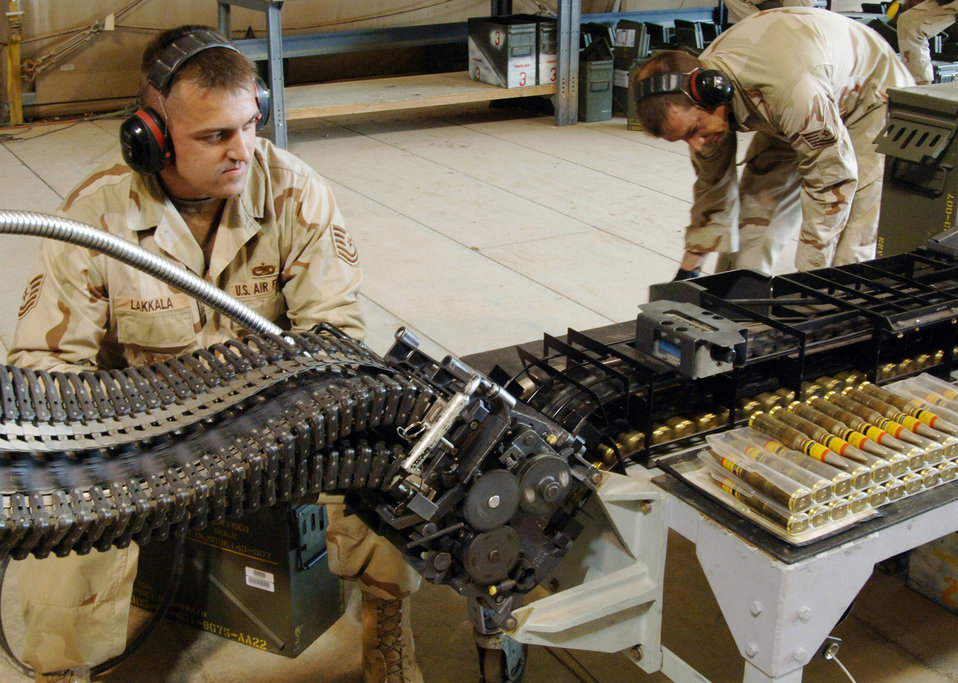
New ammo improves pilot safety, reduces collateral damage

Tech. Sgt. Chris Lakkala (left) regulates the rate of operation for the replenisher tray as it feeds PGU-28A/B 20mm cannon rounds into the universal ammunition loading system while Tech. Sgt. J.C. Whitney prepares more rounds to load through the replenisher Feb. 25 at Balad Air Base, Iraq. The new ammo allows for higher velocity, a greater standoff distance and increased safety for pilots, all contributing to greater effectiveness while providing close-air support. Its use Feb. 26 against insurgents east of Baghdad, Iraq, marked the first in battle for Air Force F-16 Fighting Falcon pilots. Both Airmen are deployed from Aviano Air Base, Italy.